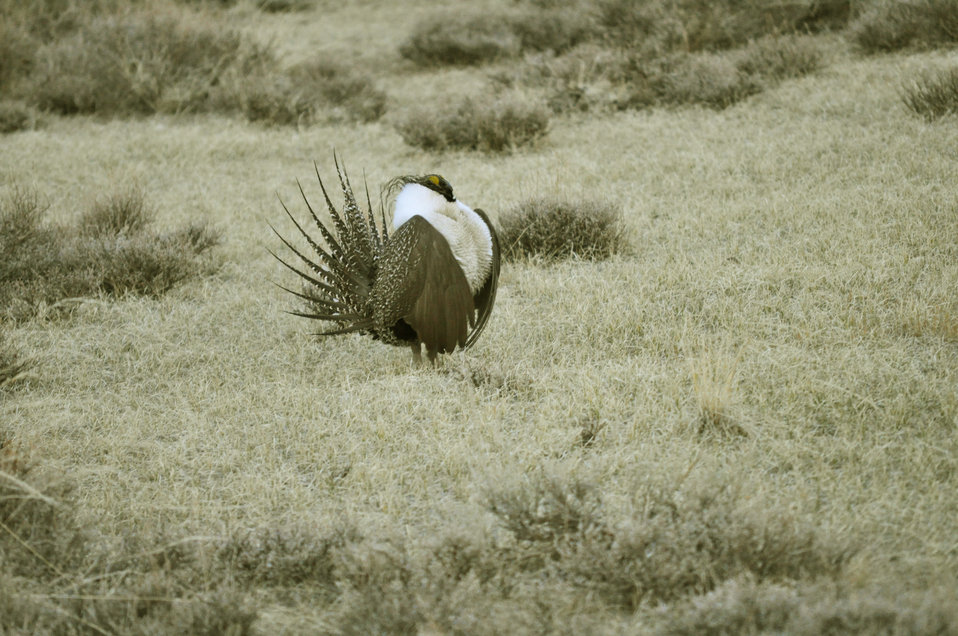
Male greater sage-grouse struts at lek (dancing or mating grounds) to attract females near Bodie, California.